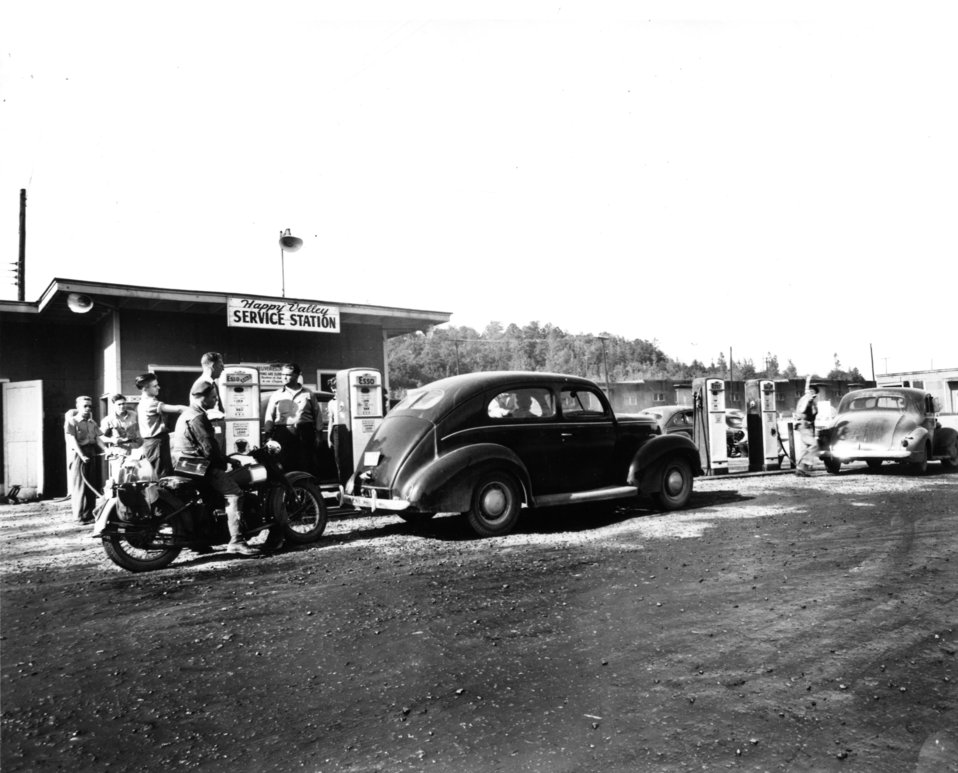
Business activity at Oak Ridge